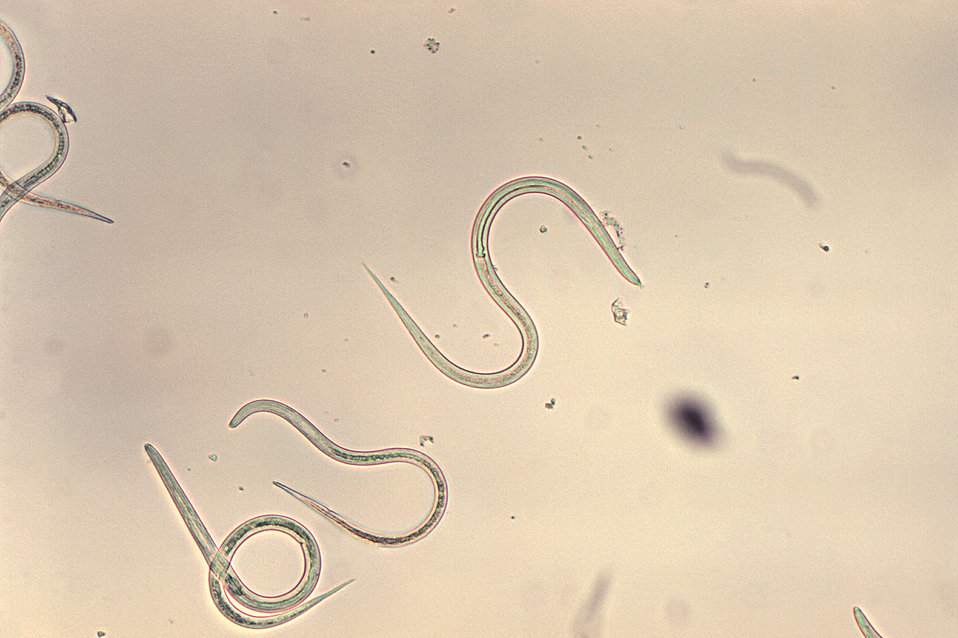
Magnified 100X, this photomicrograph depicted a number of Strongyloides sp. filariform larvae.Laboratory Diagnosis: